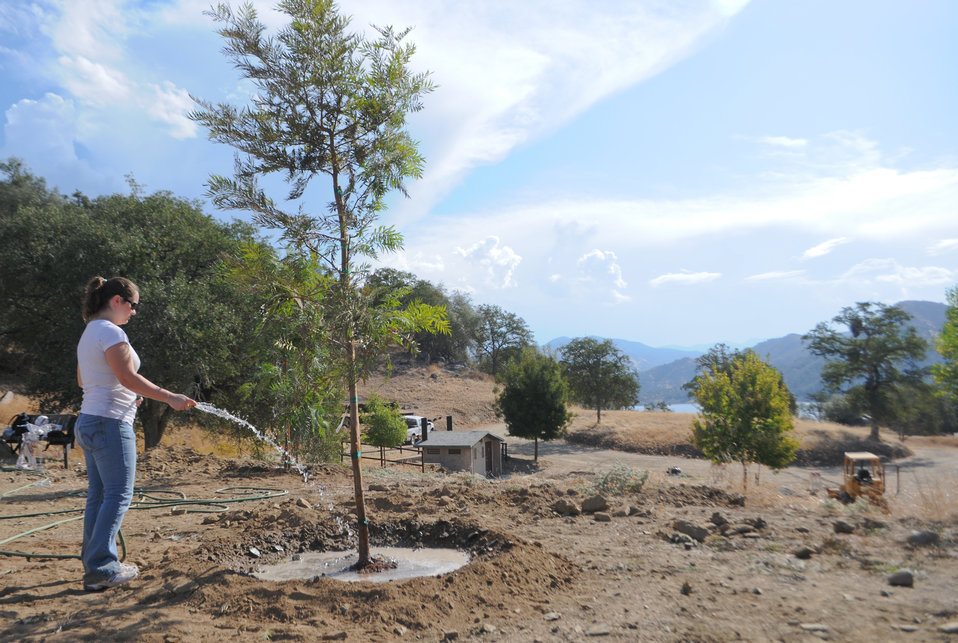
National Public Lands Day at Pine Flat Lake

Volunteers plant trees at Pine Flat Lake near Sanger, Calif., Sept. 24 in celebration of National Public Lands Day. More than 60 volunteers turned out to help plant trees and build a new sand volleyball court and horseshoe pits at the park. Pine Flat was one of seven U.S. Army Corps of Engineers Sacramento District recreation parks that participated in the event.